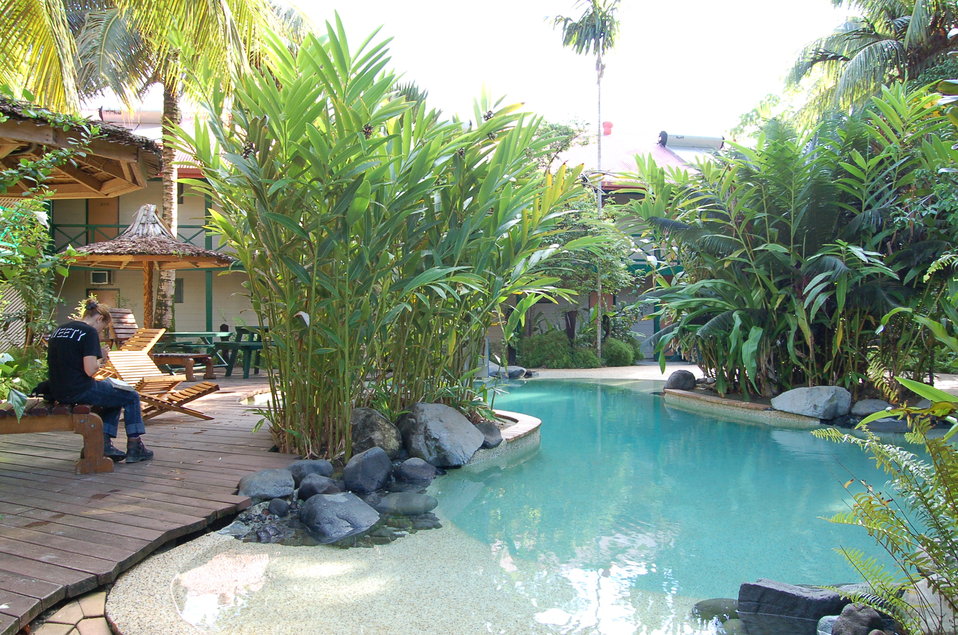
Deutsch: Gizo Hotel